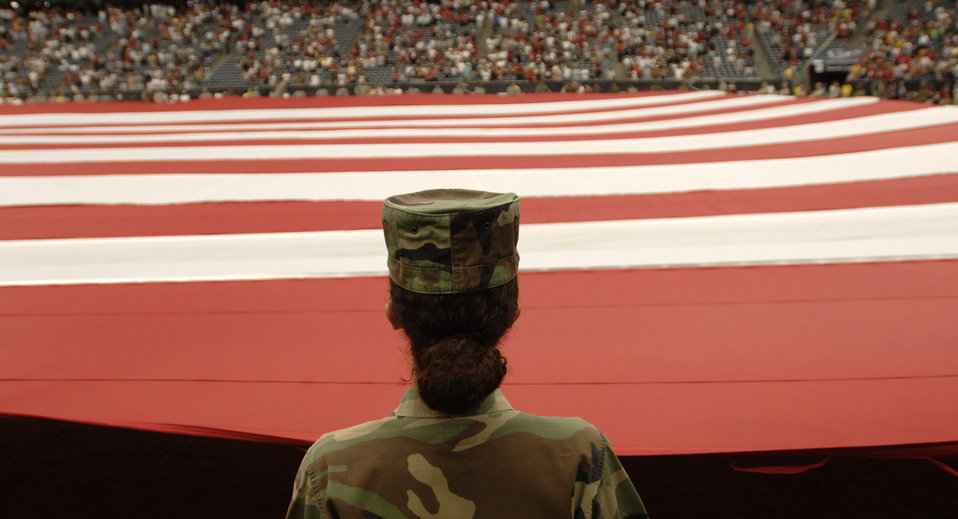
The Texans honored military servicemembers in their Salute to the Military day

An Air Force Airmen along with 199 other servicemembers pulled out a football-field size flag during the pregame events of the Houston Texans versus Washington Redskins football game at Reliant Stadium in Houston Sept. 24.